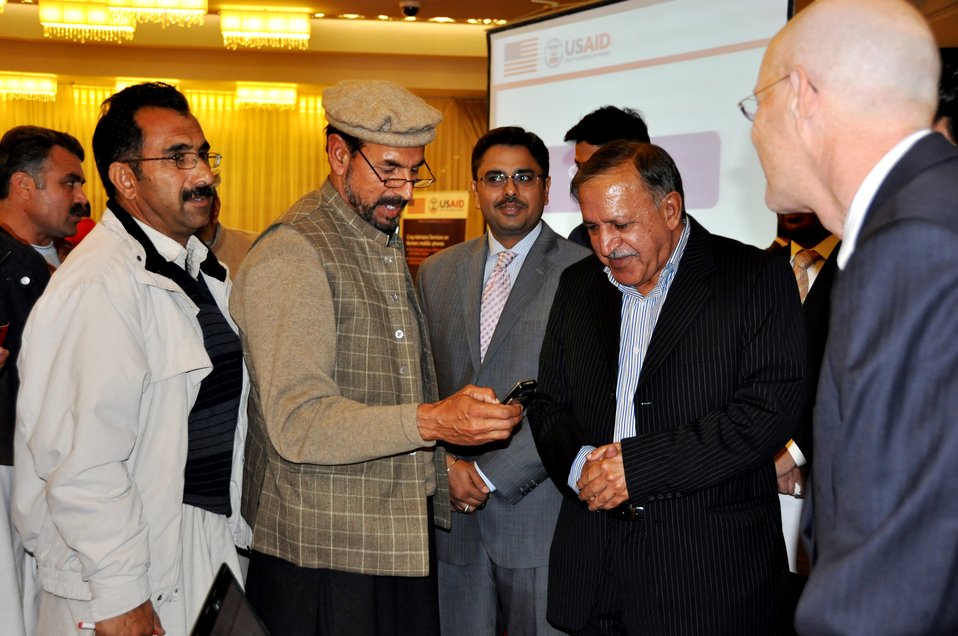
Launch Ceremony of the Mobile Agriculture Project

A farmer showing the SMS he just received during the launch ceremony